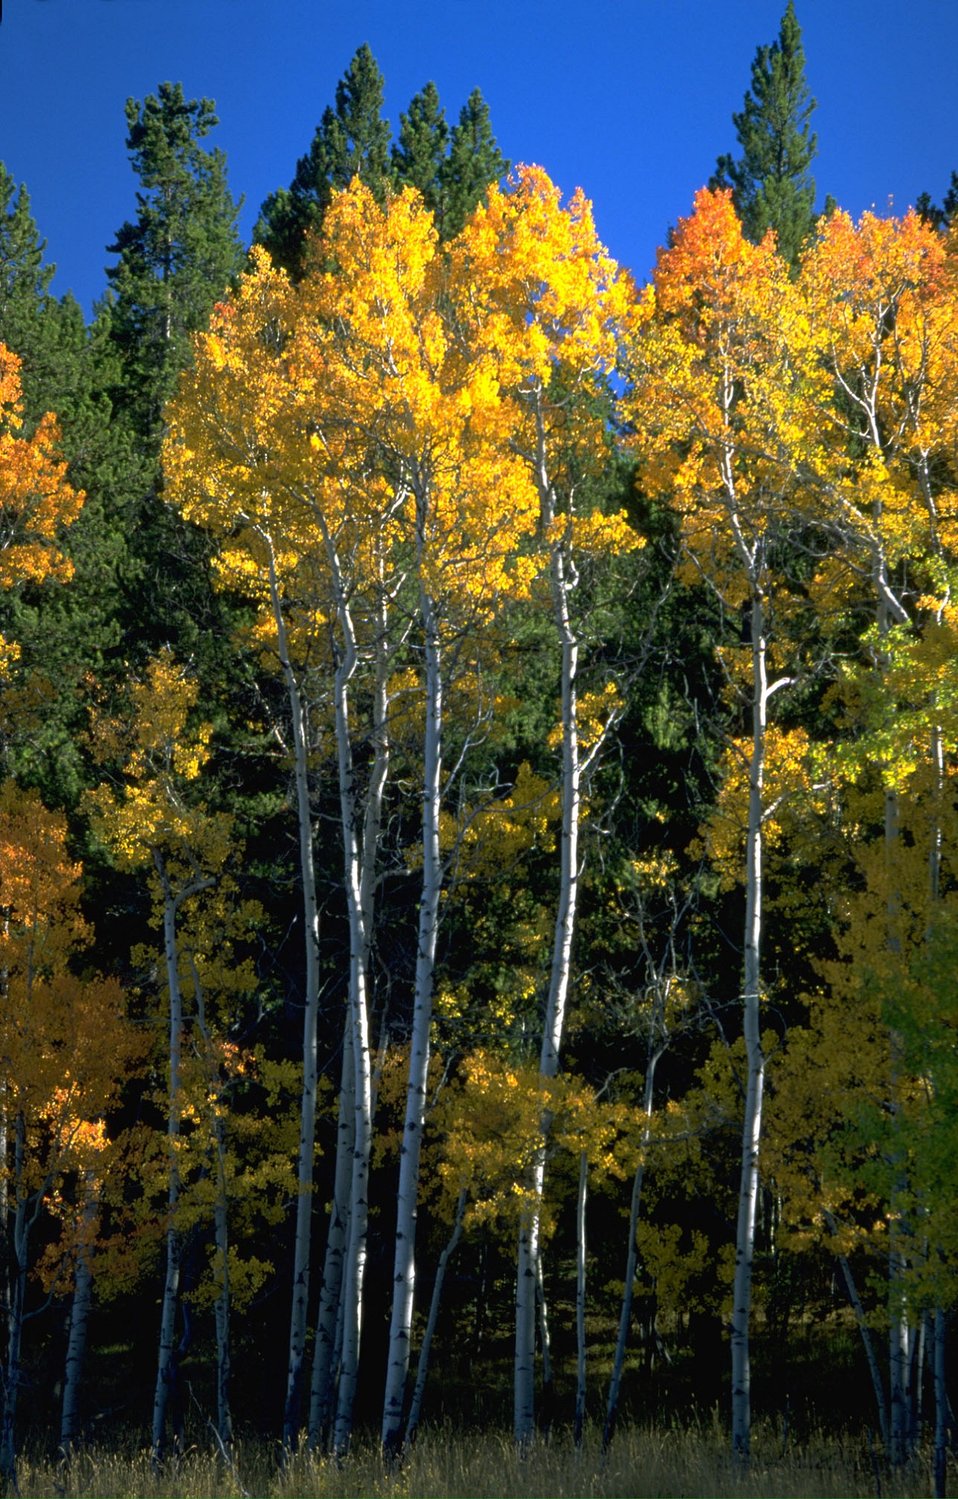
Aspen trees turning to autumn colors